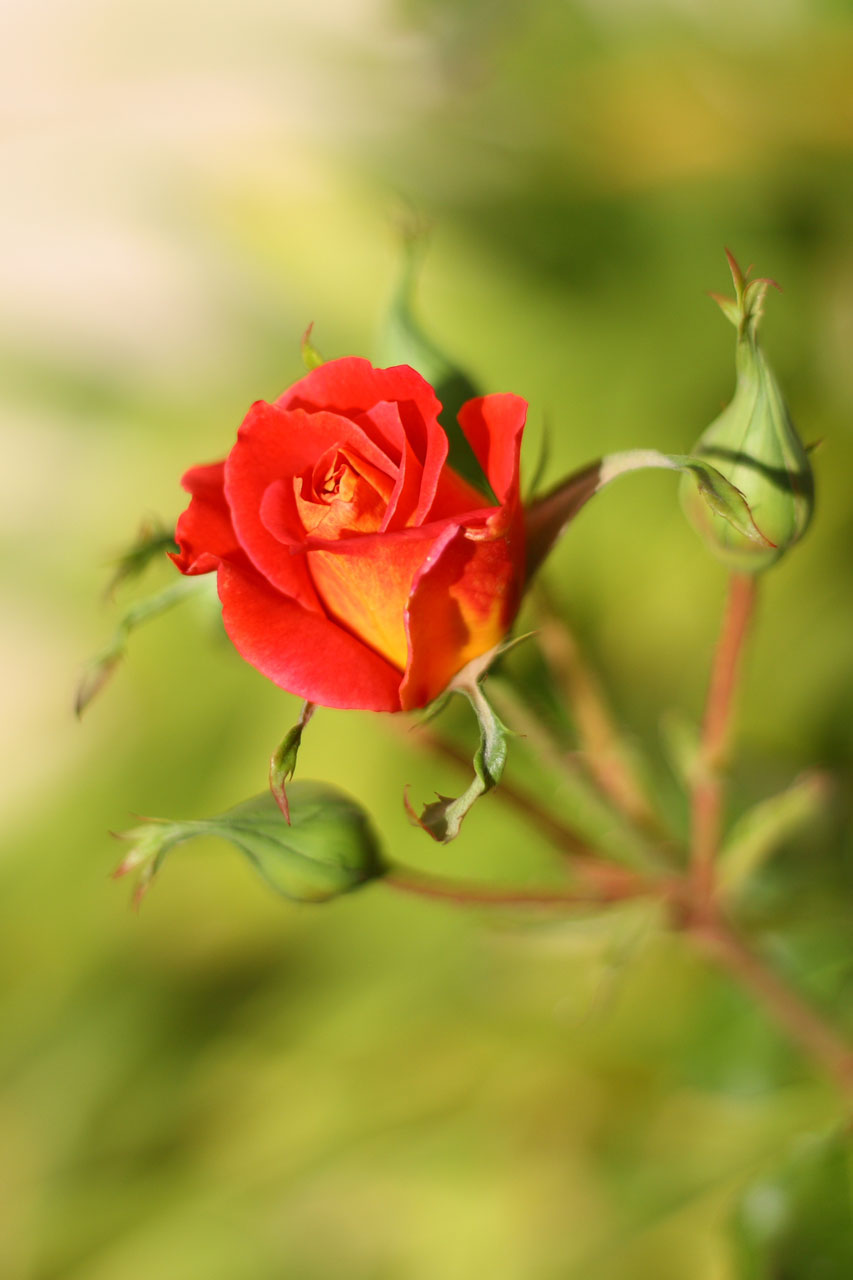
Red and yellow rose bud

Tight rose bud with other, smaller buds.